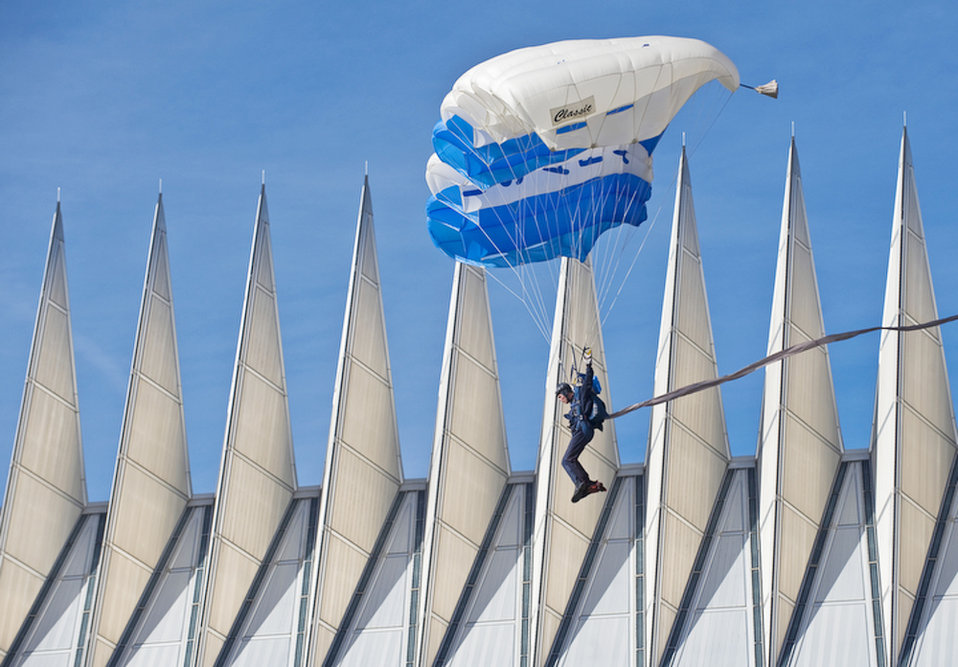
Go Falcons

A member of the U.S. Air Force Academy's Wings of Blue Parachute team goes past the spires of the Cadet Chapel to land at the Academy's Terrazzo Nov. 7, 2009, during ESPN's